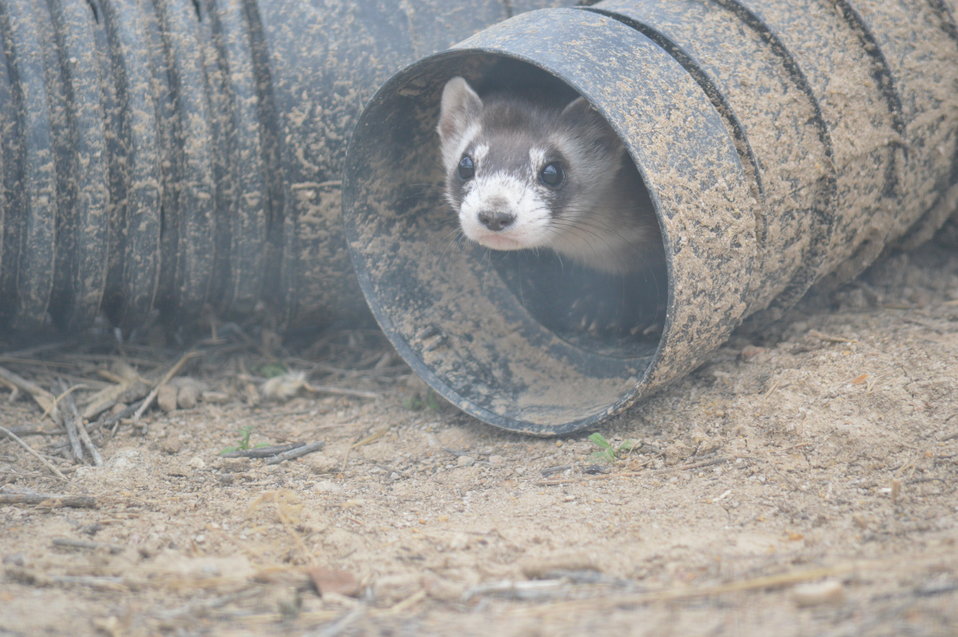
Interns visit the NBFFCC

In the summer of 2012, USFWS Region 6 interns visited the National Black-footed Ferret Conservation Center (NBFFCC) in Colorado to learn how the program reintroduces the endangered Black-footed ferret back into its native habitat.